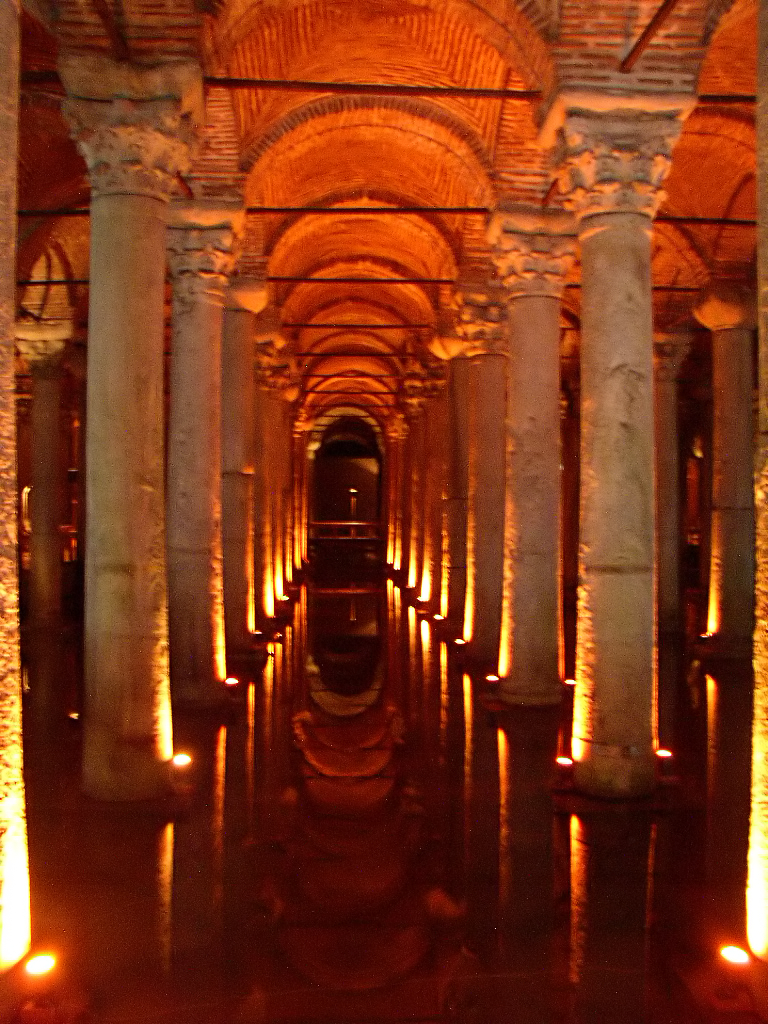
Church Cisterna di Yerabatan, in Sultanahmet, Istanbul Italiano: La Basilica Cisterna di Yerabatan, a Sultanahmet, Istanbul.